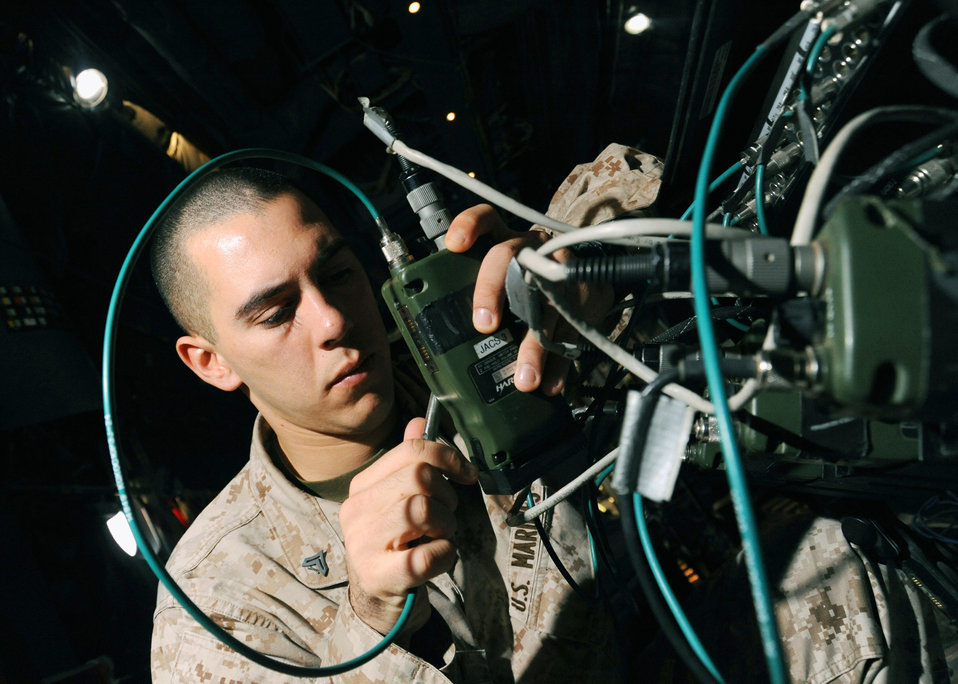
Air Force communication

U.S. Marine Cpl. Joseph Colby checks the presets and frequencies of radios on a joint airborne battle staff detachment C-130 prior to a mission Nov. 24, 2009. The JABS is a joint operation focused on providing airborne communications support to ground forces. Corporal Colby is an air control electronics operator with the 777th Expeditionary Airlift Squadron.